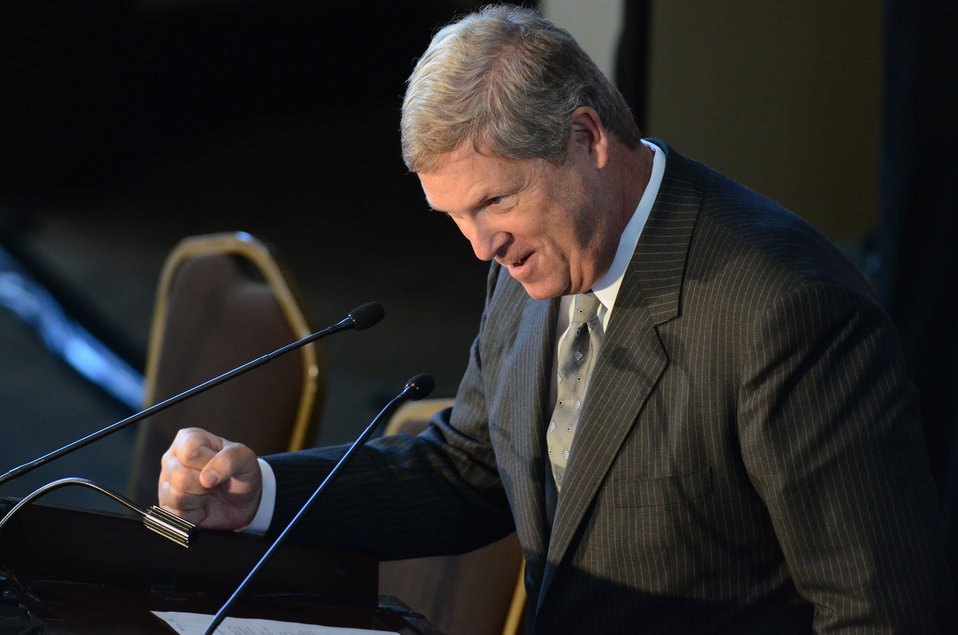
Agriculture Secretary Tom Vilsack speaks at the National Export Initiative (NEI) Small Business Tour in Milwaukee, WI, on Wednesday, August 3, 2011. An important goal of the NEI is to provide additional assistance to small and medium-sized businesses, which are major drivers of job creation. The NEI is assisting small and medium-sized businesses win more foreign government contracts, find buyers worldwide, participate in more trade missions and trade shows, receive more export financing, and learn new ways to sell products and services overseas.